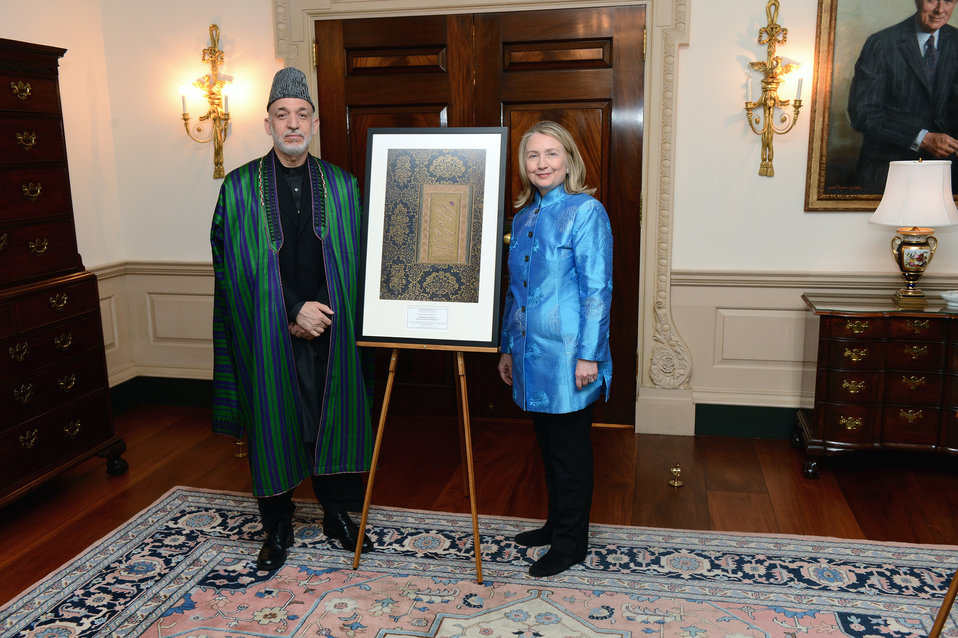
Secretary Clinton Participates in Library of Congress Presentation to the Government of Afghanistan

U.S. Secretary of State Hillary Rodham Clinton presents Afghan President Hamid Karzai with a gift from the U.S. Library of Congress and the Carnegie Corporation of New York -- a digital copy of the entire body of Afghanistan-related works at the library, as well as a framed copy of a rare manuscript from the collection, Washington, D.C., January 10, 2013.